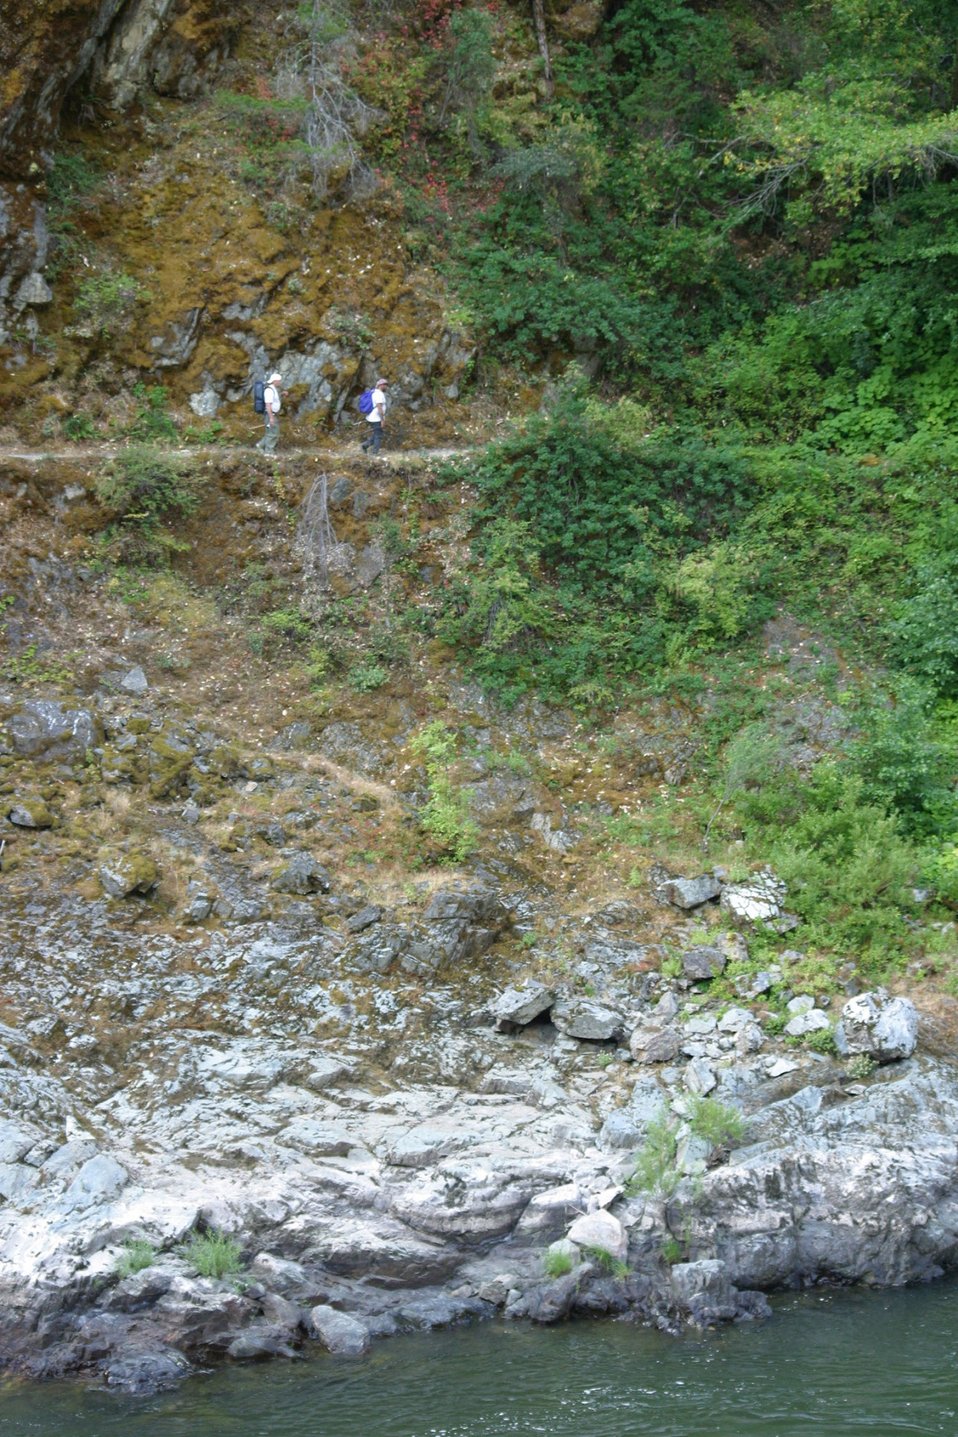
Hiking Rainie Trail between Grave Creek and Rainie Falls.